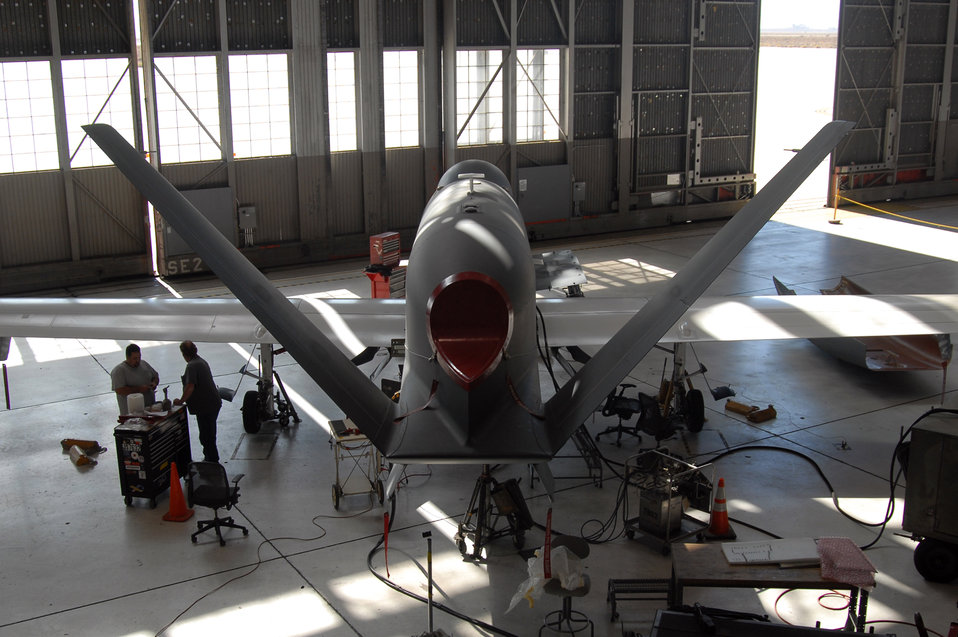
Edwards test squadron test drives Global Hawk

Maintainers with the Global Hawk Combined Test Force perform maintenance on a Global Hawk unmanned aircraft system Oct. 24 at Edwards Air Force Base, Calif. As part of the Combined Test Force, members of the 31st Test and Evaluation Squadron test drives the Global Hawk system for the Air Force.